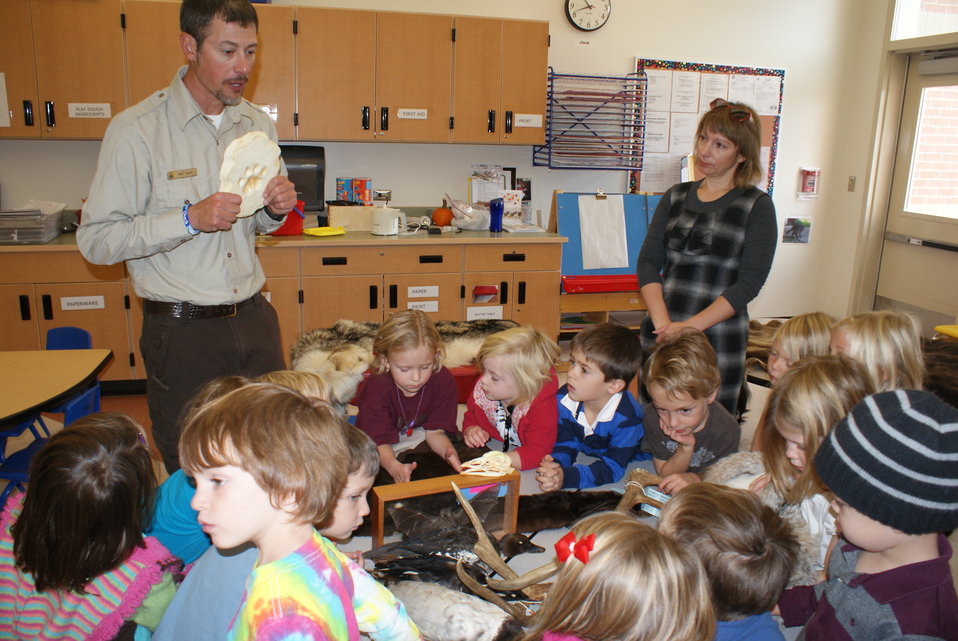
Scientists in the Community Program

U.S. Fish and Wildlife Service Mountain-Prairie Region Deputy ARD for External Affairs, Matt Kales, introduces early childhood education students at William Roberts Elementary School in Denver to some of Colorado's native and historic wildlife species.